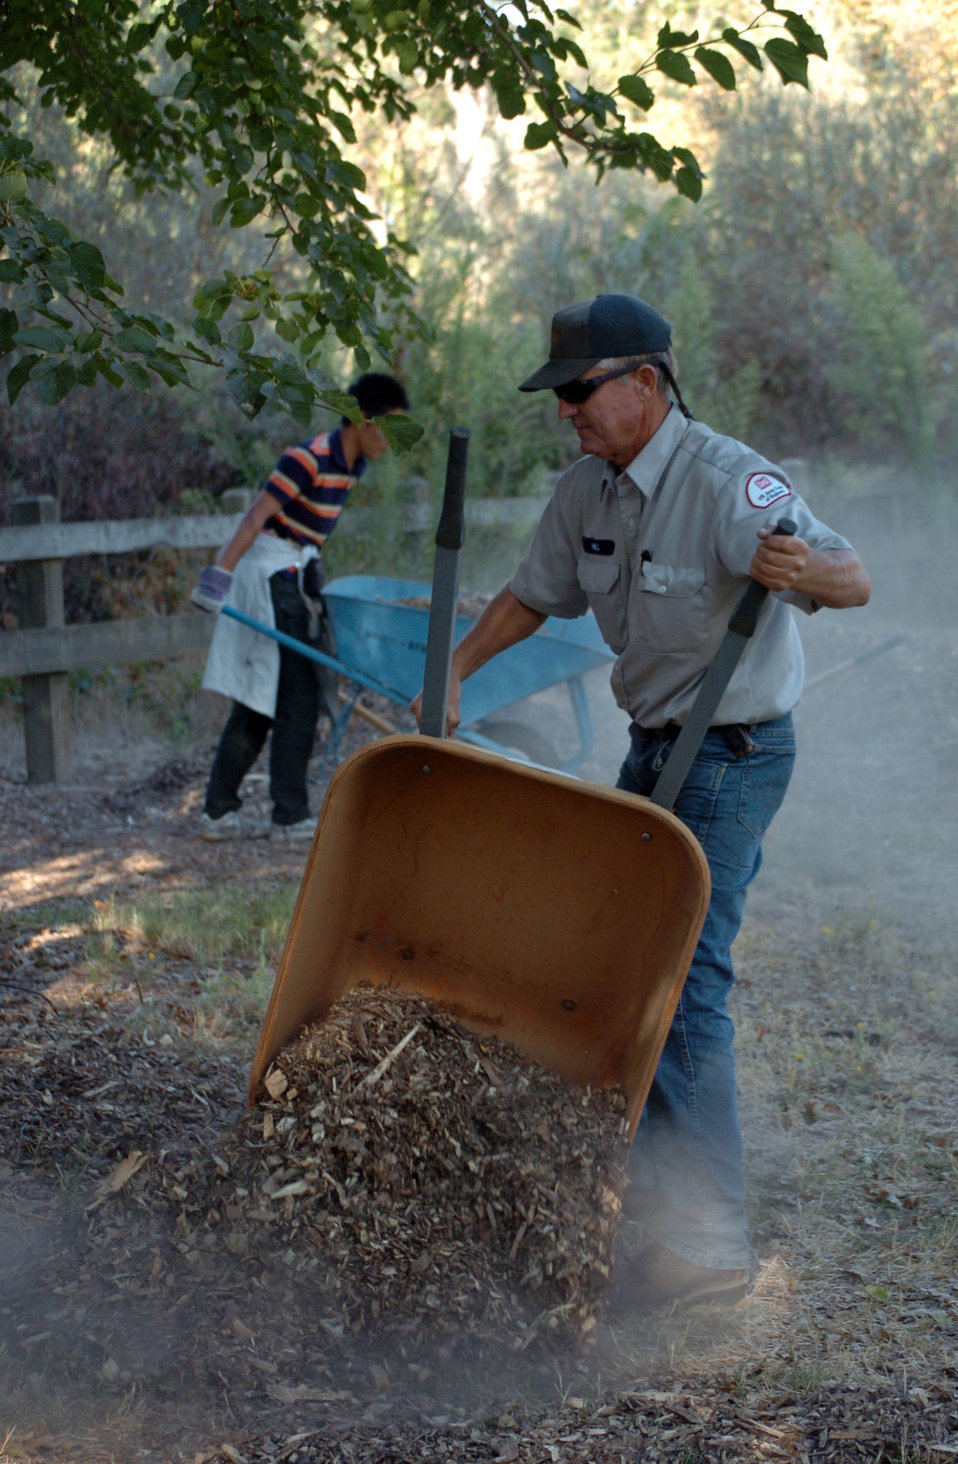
STANISLAUS RIVER PARKS, Calif. (Sept. 25, 2010) -- Jim Hill (right), maintenance team leader for Stanislaus River Parks, spreads wood chips along a trail near the Stanislaus River Sept. 25. Volunteers were out helping at the park during the 17th annual National Public Lands Day, helping with trail restoration and litter pick up. “Volunteers love using trails, so if they can contribute to it and see a result, they really enjoy that part,” said Jason Faridi, senior park ranger at Stanislaus River Parks.